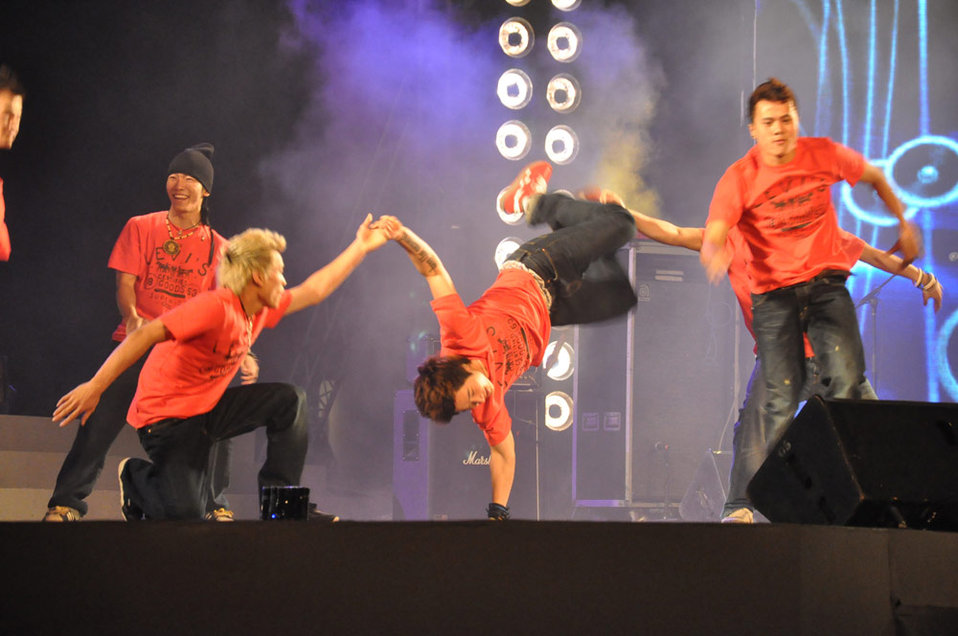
MTV EXIT Hanoi concert March 27, 2010

Big Toe performs in Hanoi.